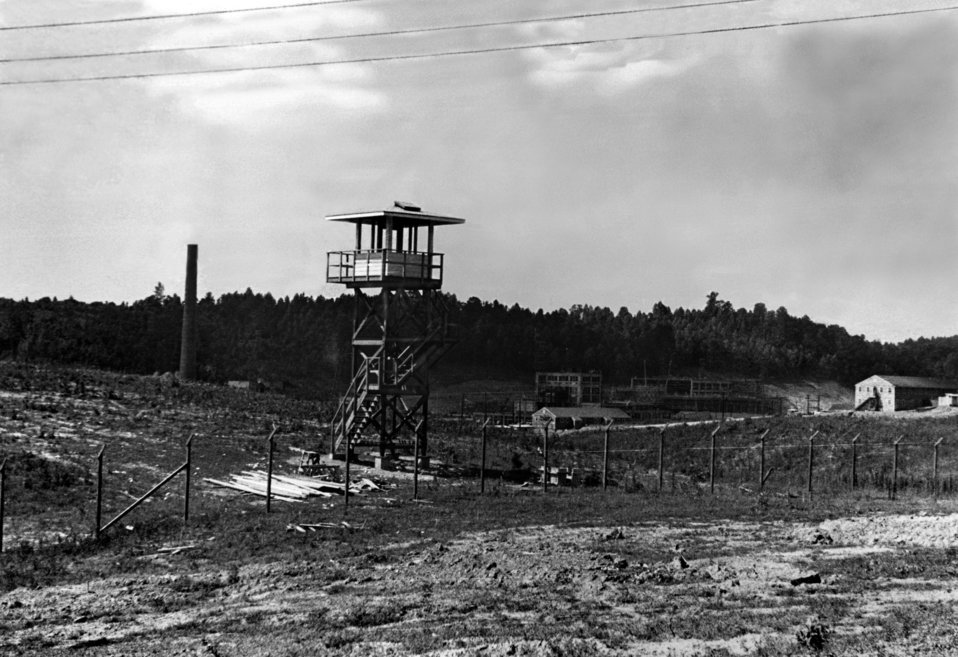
Guard Tower ORNL 1943 Oak Ridge

Roll52-27 DOE photo Ed Westcott 7-22-1943 Oak Ridge Tennessee